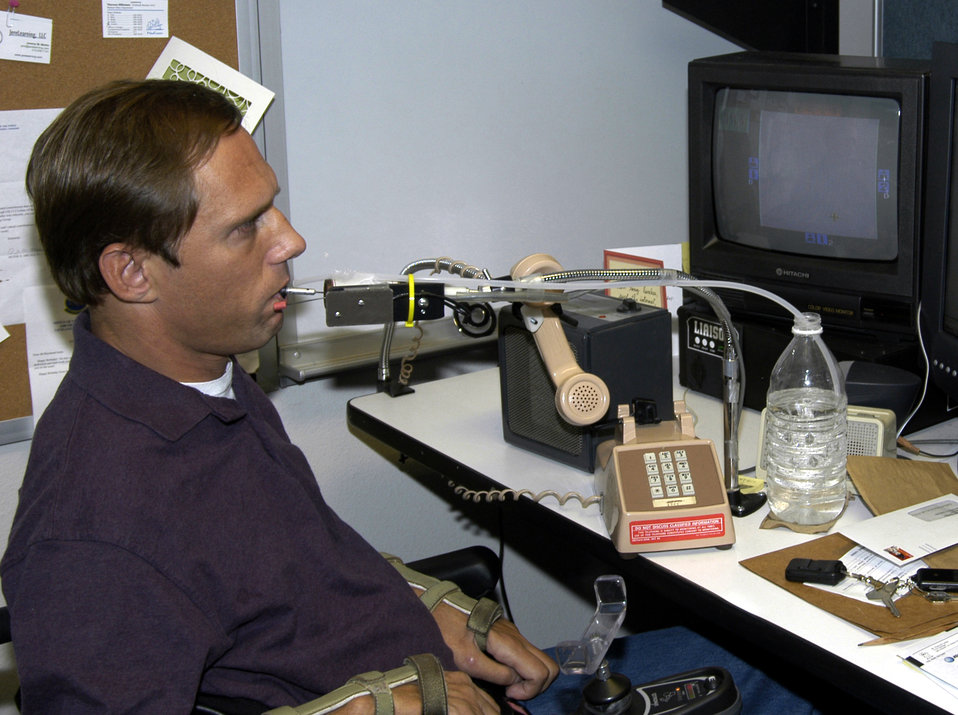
Lackland civilian wins DOD award

LACKLAND AIR FORCE BASE, Texas -- Raymond Jenks uses a computer-input device accessed by a chin controller. The device allows him to answer and dial a telephone. Jenks received the 2003 Outstanding Employee with a Disability Award. He is an instructional systems specialist with the 37th Training Support Squadron here.